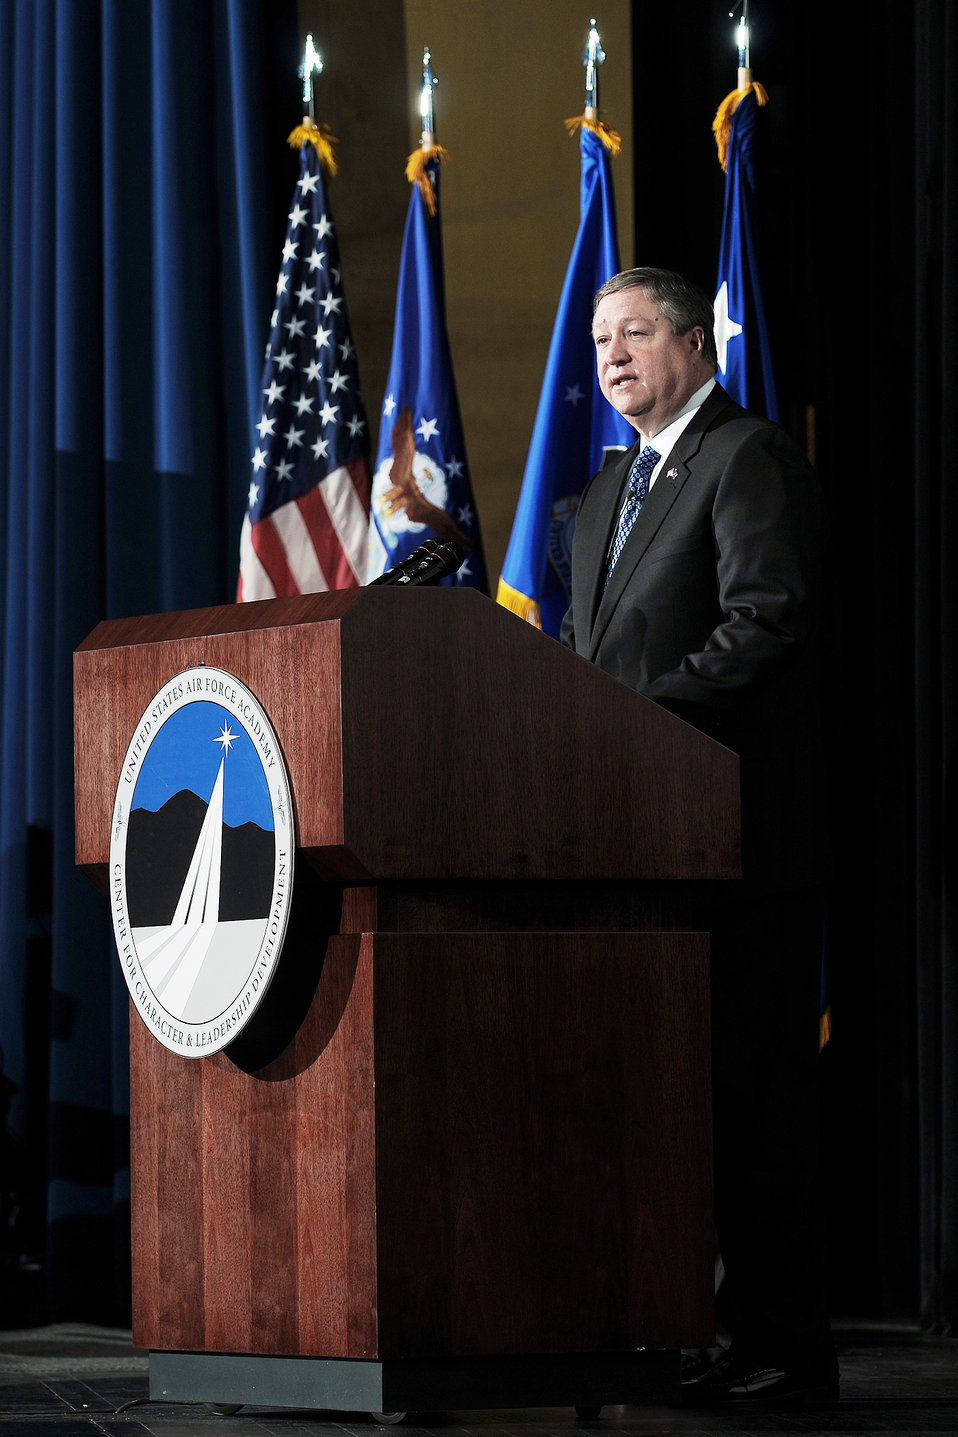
Speakers motivate cadets

Secretary of the Air Force Michael Donley talks to Air Force Academy cadets about the nature of service in the Arnold Hall Theater Feb. 19, 2010, during the National Character and Leadership Symposium. The secretary was one of 17 keynote speakers for the two-day event; others included veterans of the Battle of Roberts Ridge as well as Baseball Hall of Famer Tommy Lasorda and former NFL head coach Brian Billick.